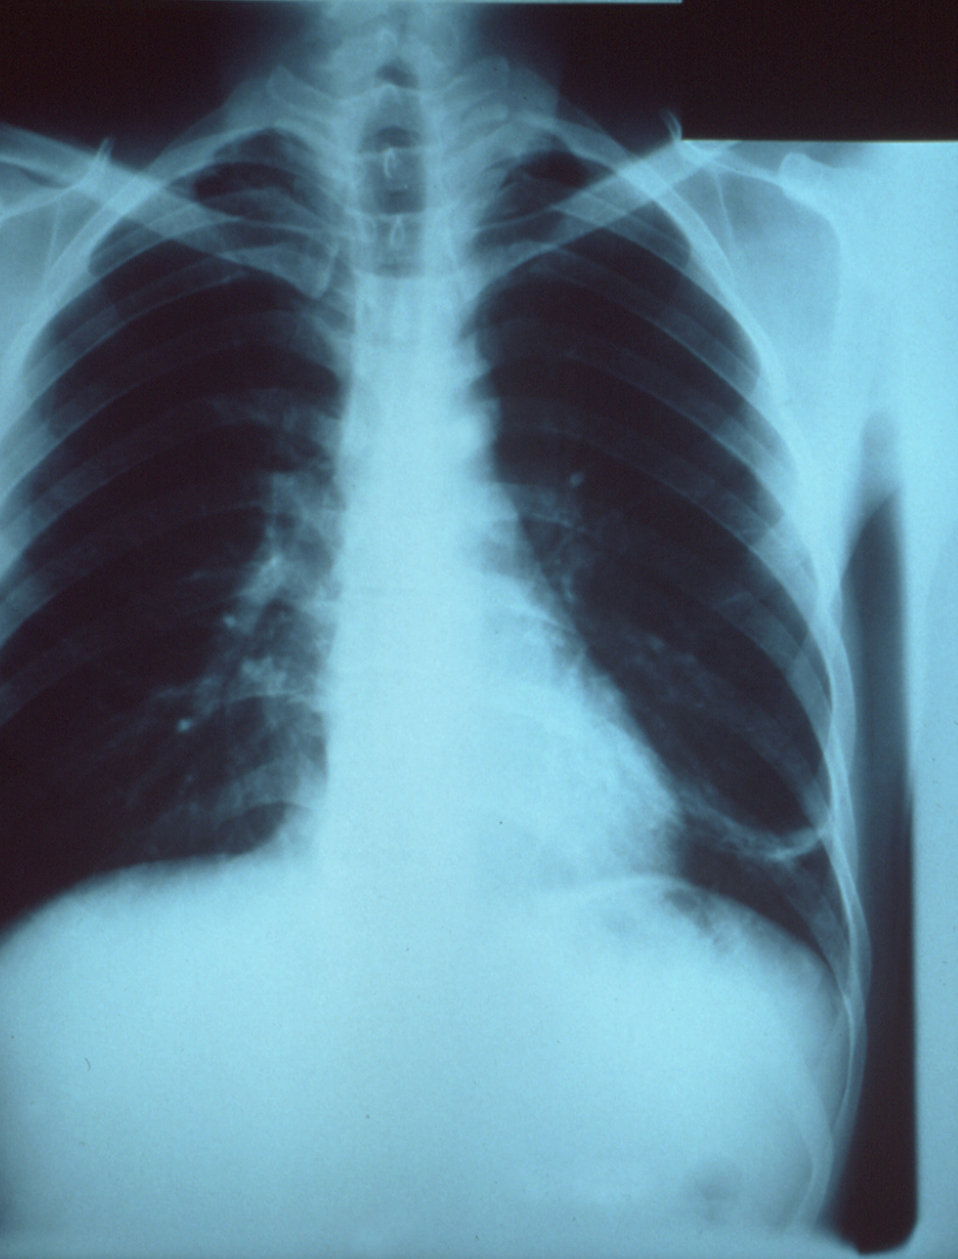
This anteroposterior chest x-ray revealed early left lower lobe pneumonia with an unknown etiologic profile.